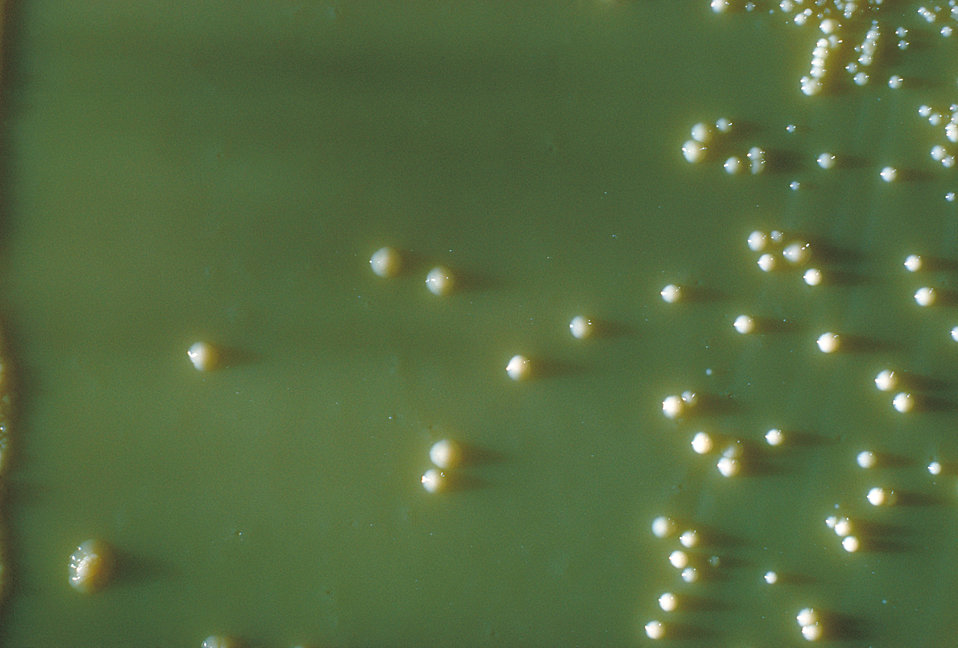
Here a Lowenstein-Jensen plate culture has been inoculated with 15 strains of Mycobacteria spp..